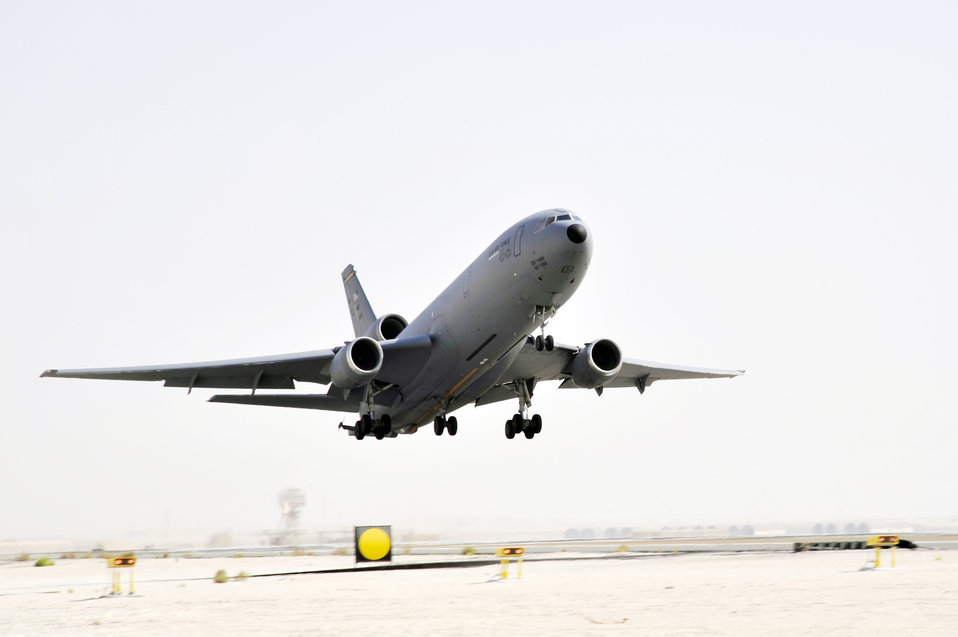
KC-10s provide aerial refueling support

A KC-10 Extender takes off from an air base in Southwest Asia en route to provide aerial refueling support for Operation Enduring Freedom. The KC-10 is an advanced tanker and cargo aircraft capable of providing more than 356,000 pounds of fuel and can carry 75 passengers.